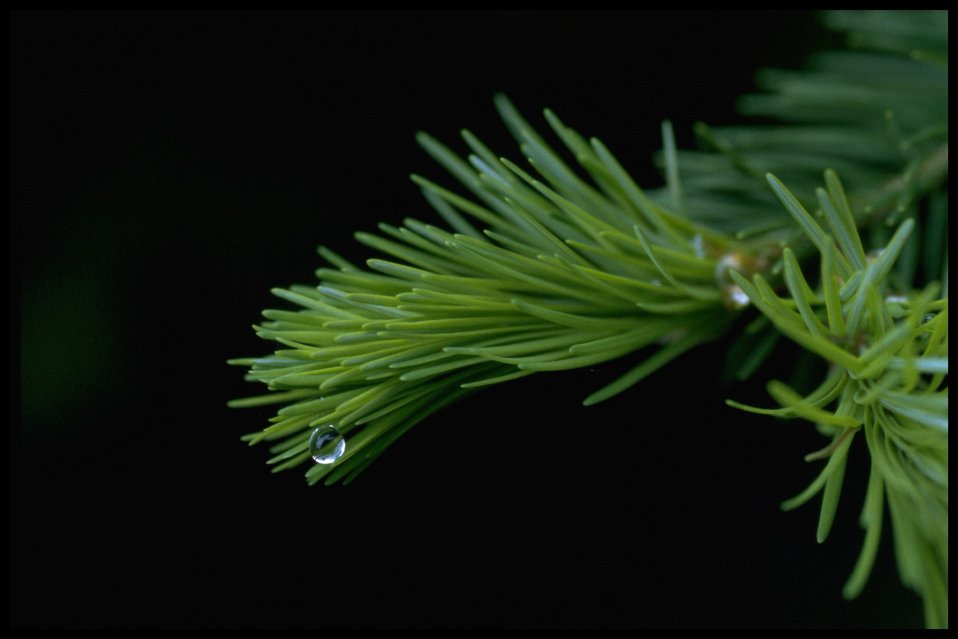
Closeup shot of new conifer growth.